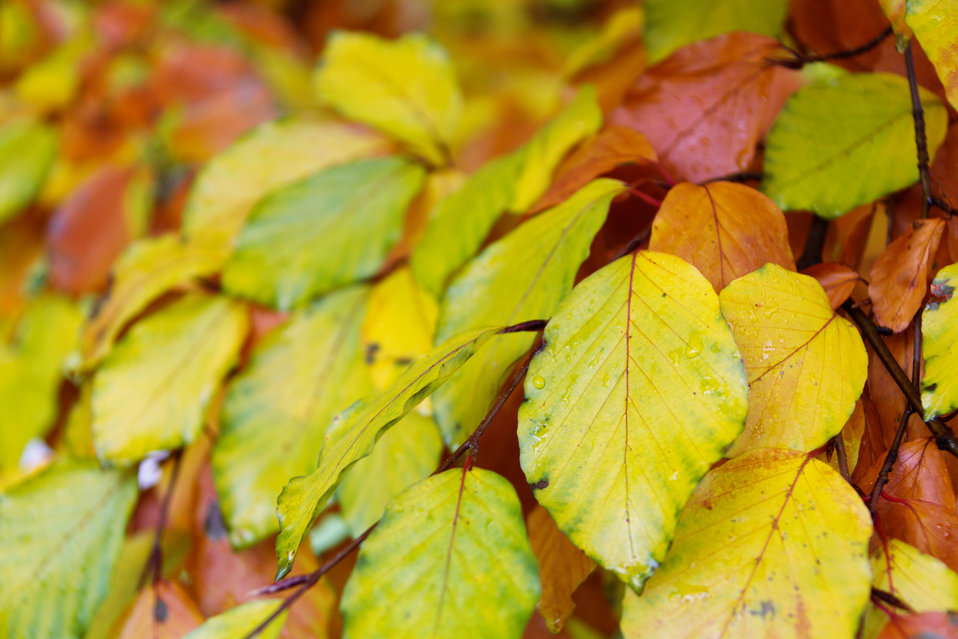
Beech leaves pattern

Colorful beech leaves pattern in autumn.